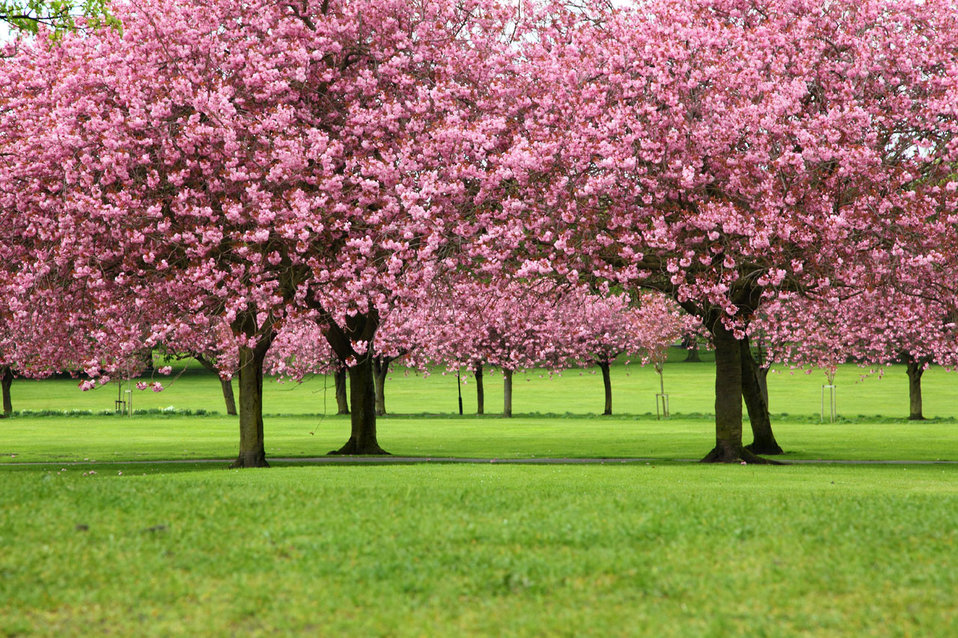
Sakura trees in park in harrogate - united kingdom.